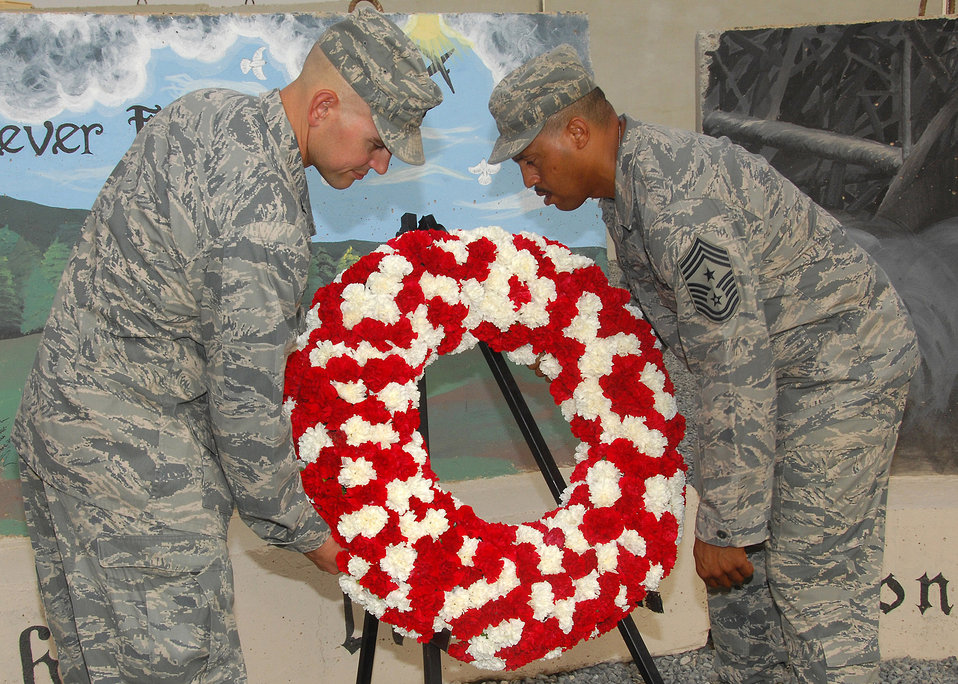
Ceremony inspires members to never forget Sept. 11

Col. Cameron Torrens and Chief Master Sgt. Jeffrey Antwine place a wreath at the Sept. 11 memorial during the remembrance ceremony Sept. 11 at an air base in Southwest Asia. The ceremony included a wreath-laying ceremony, a 21-gun salute and the playing of